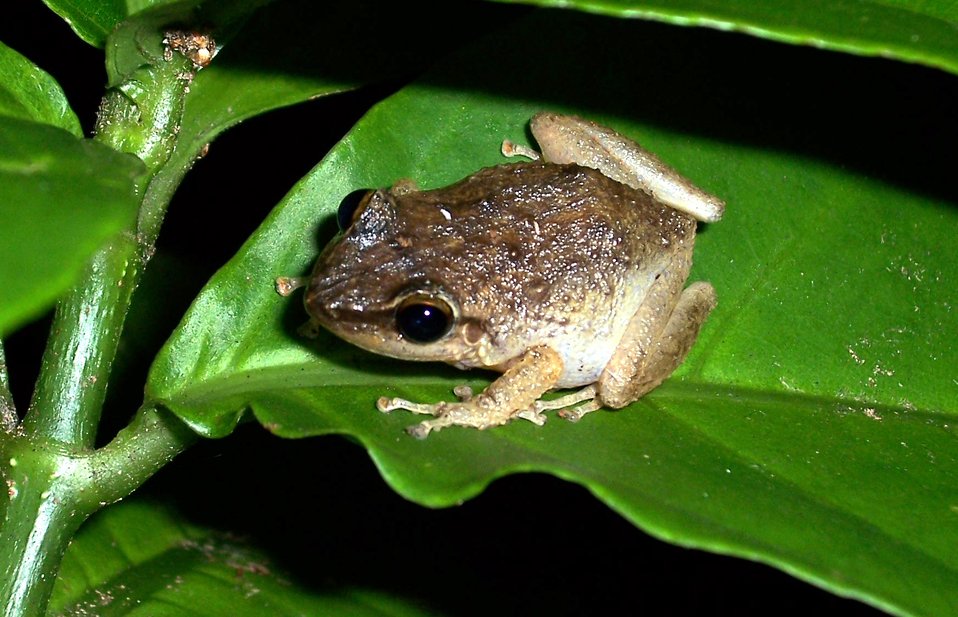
The most distinctive feature of coqui frogs is their loud two-note mating call which may exceed 85 decibels. These invasive amphibians arrived in Hawaii by hitchhiking on plants as part of the horticulture trade. The frogs have impacted Hawaii’s environment and economy by feeding on native invertebrates, competing with native wildlife, and impacting trade.